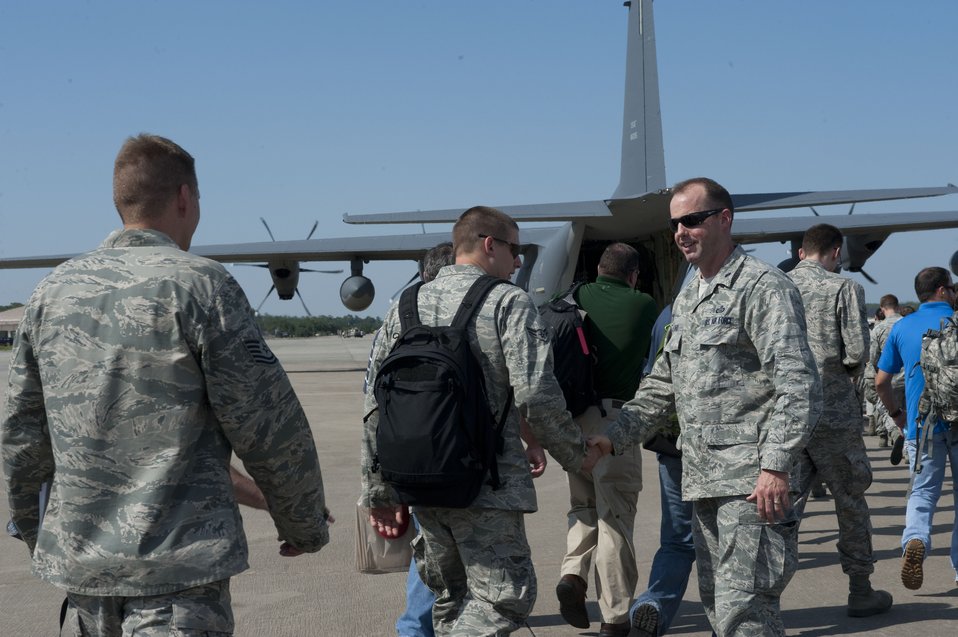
Tropical Storm Preparation

Lt. Col. Bryan Collord shakes hands with Airmen from his squadron as they depart for the flightline on Hurlburt Field, Fla., Aug. 26, 2012. Hurlburt Field assets were being evacuated as Tropical Storm Isaac approaches the Gulf Coast Region. Collord is commander of 11th Intelligence Squadron.